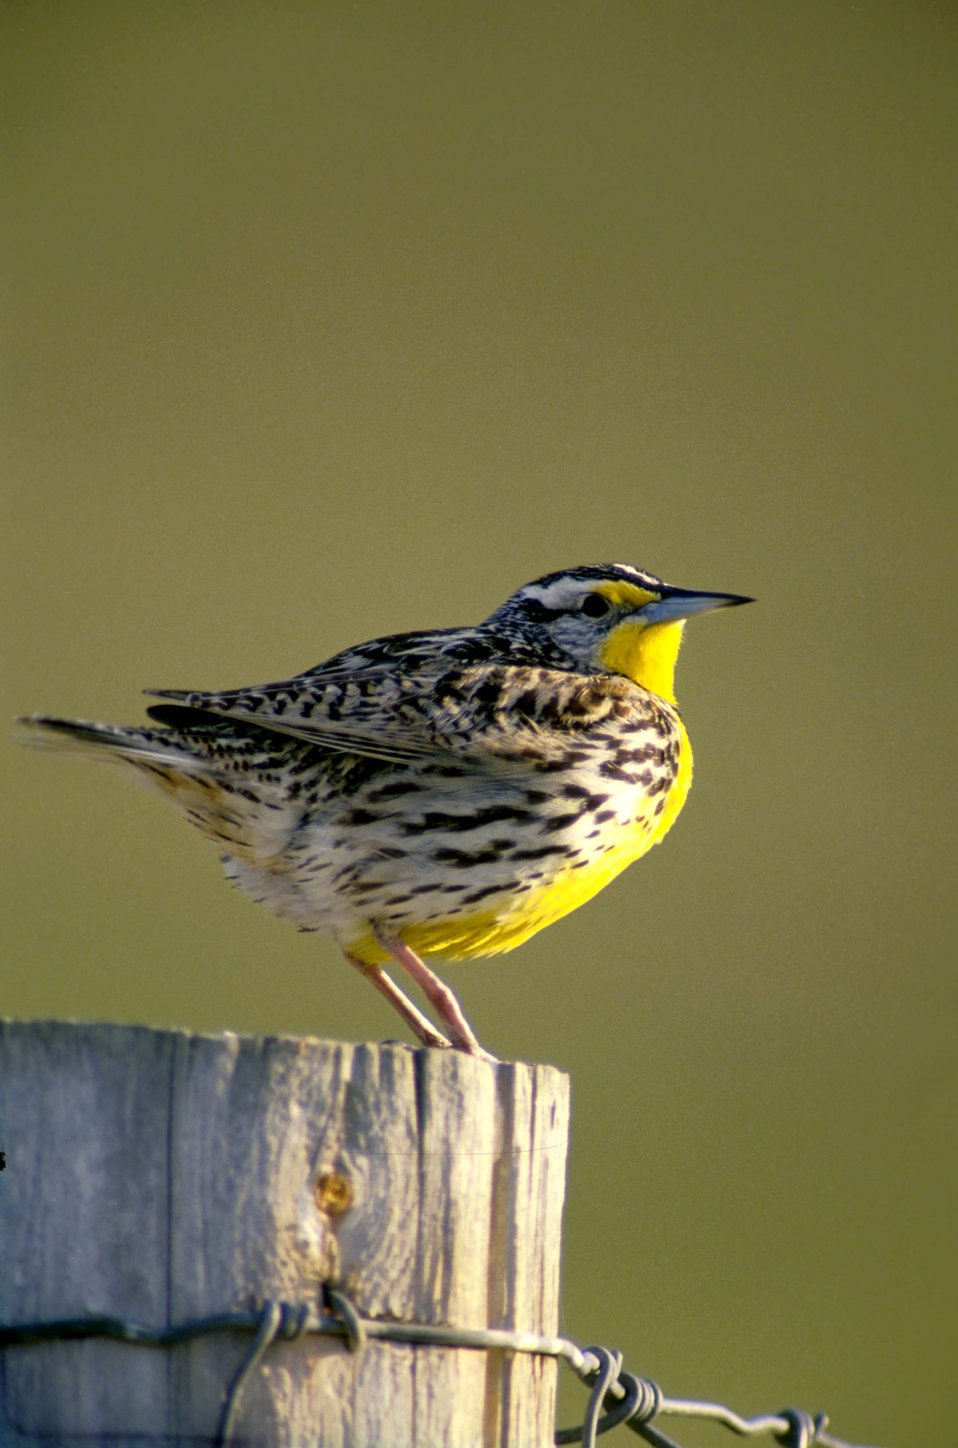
Meadow Lark